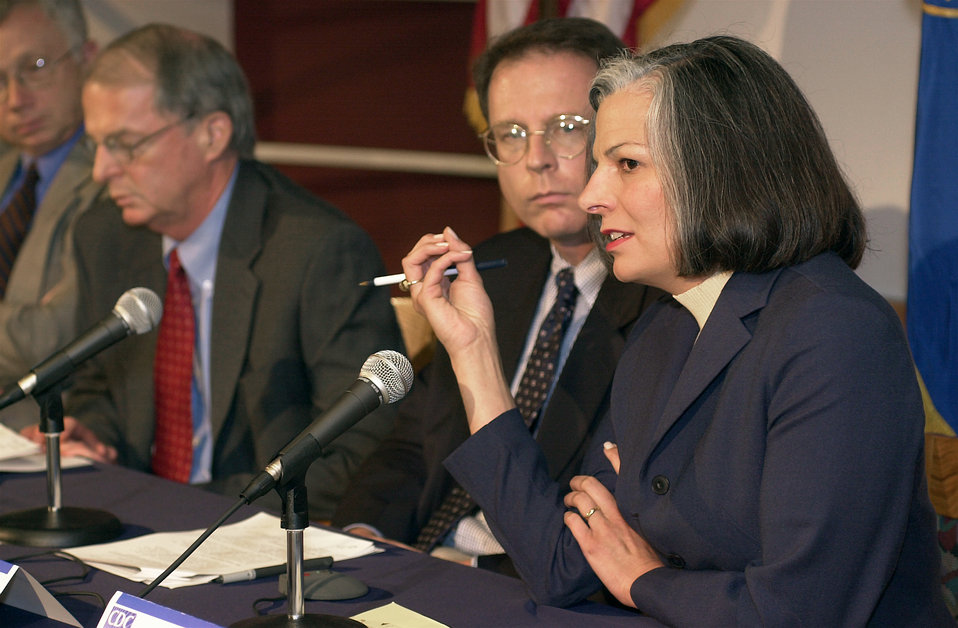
Centers for Disease Control and Prevention Bioterrorism Preparedness Press Briefing, August 27, 2002.